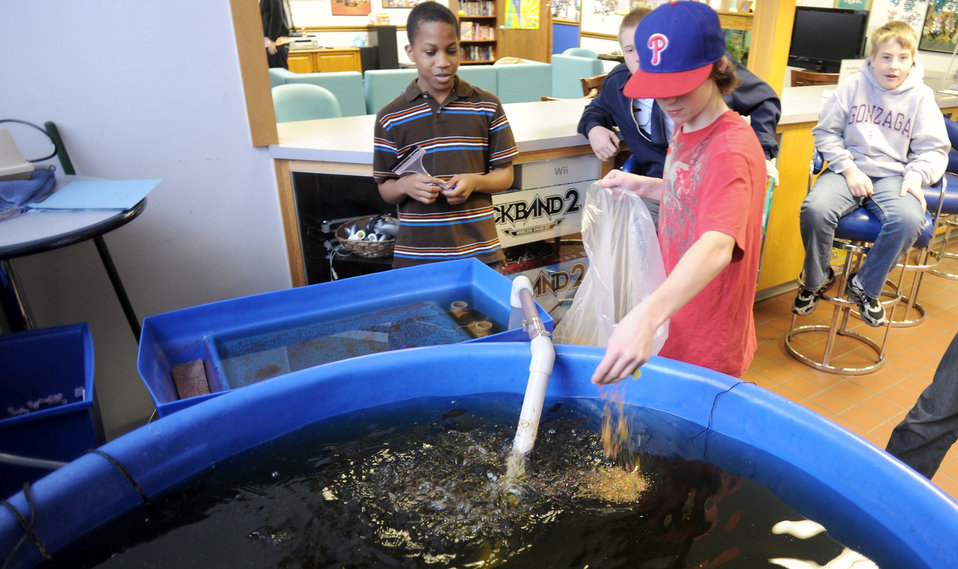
Teens Raise Tilapia for the Hungry

C.J. Kriger, a teen center regular feeds, tilapia as other teens look on. The teens are raising 200 tilapia to donate to the Spokane Union Gospel Mission in February, 2011.